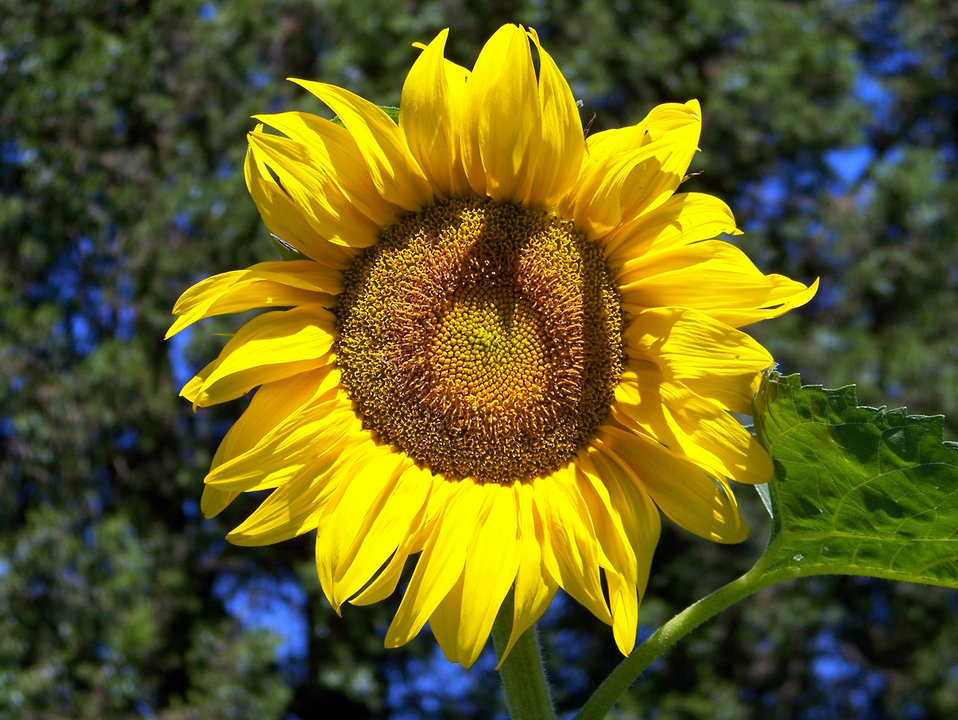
Sunflower bloom.